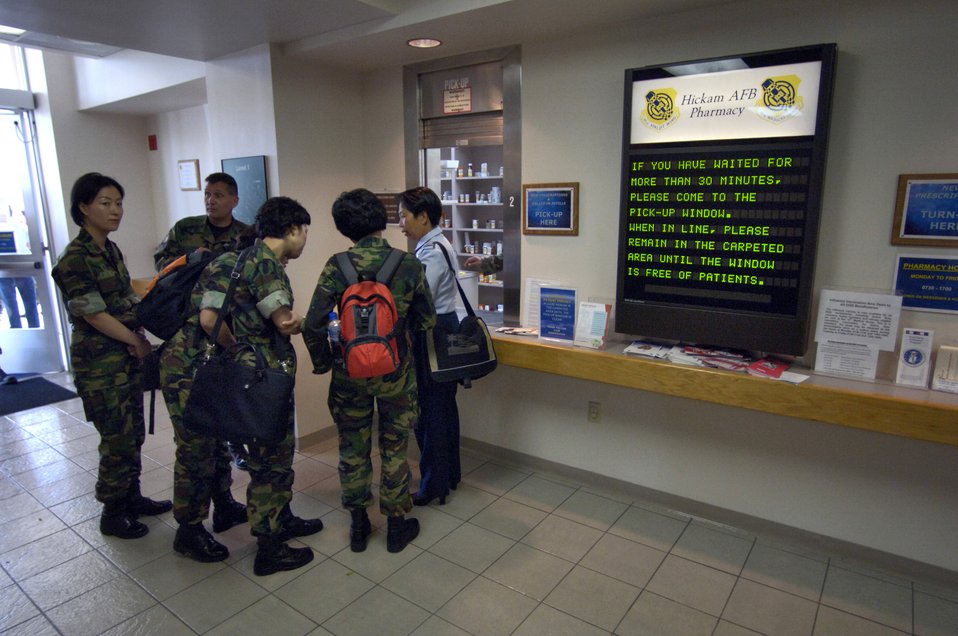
Korean nurses visit Hickam to exchange ideas

South Korean Air Force nurses check pharmacy operations during a visit to the William R. Schick Clinic at Hickam Air Force Base, Hawaii, on April 25, 2006. South Korea sent seven nurses to the island to discuss mass casualty response, civil-military coordination and biohazard response procedures for natural disaster management.